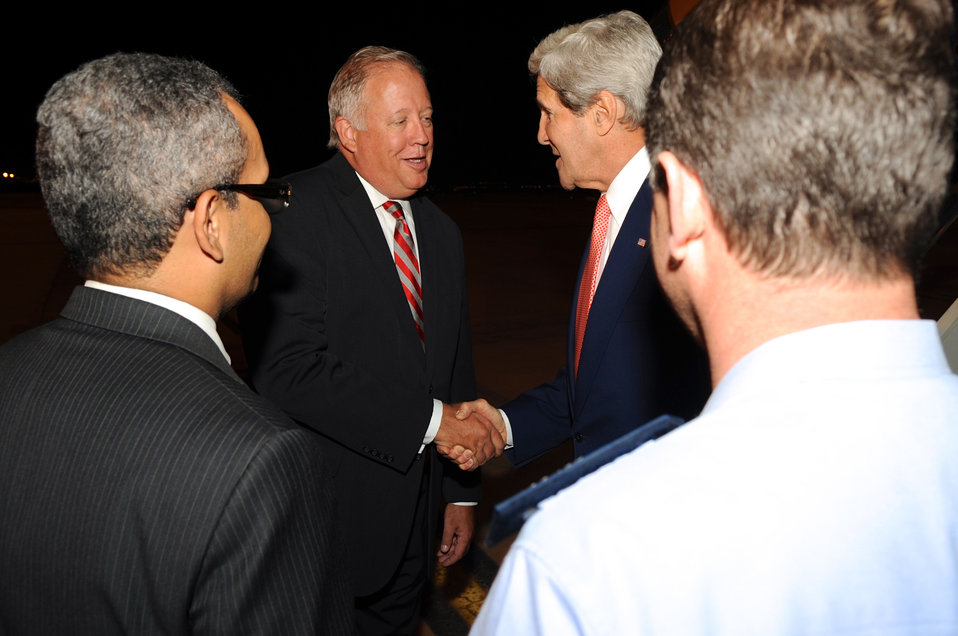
Secretary Kerry Is Greeted By Ambassador Shannon

As Brazilian officials look on, U.S. Secretary of State John Kerry is greeted by U.S. Ambassador to Brazil Thomas Shannon upon his arrival in Brasilia, Brazil, on August 13, 2013.